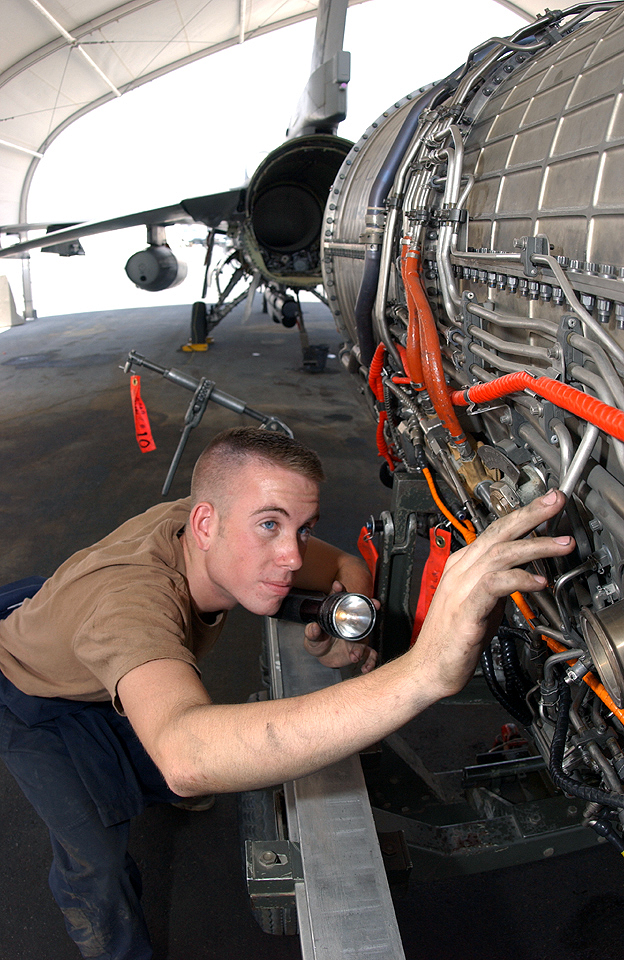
Inspection

SOUTHWEST ASIA -- Airman 1st Class Bryan Buchholz inspects an engine on an F-16 Fighting Falcon at a forward-deployed location supporting Operation Iraqi Freedom. Buchholz is assigned to the 379th Expeditionary Aircraft Maintenance Squadron and is deployed from the 421st Fighter Squadron at Hill Air Force Base, Utah.